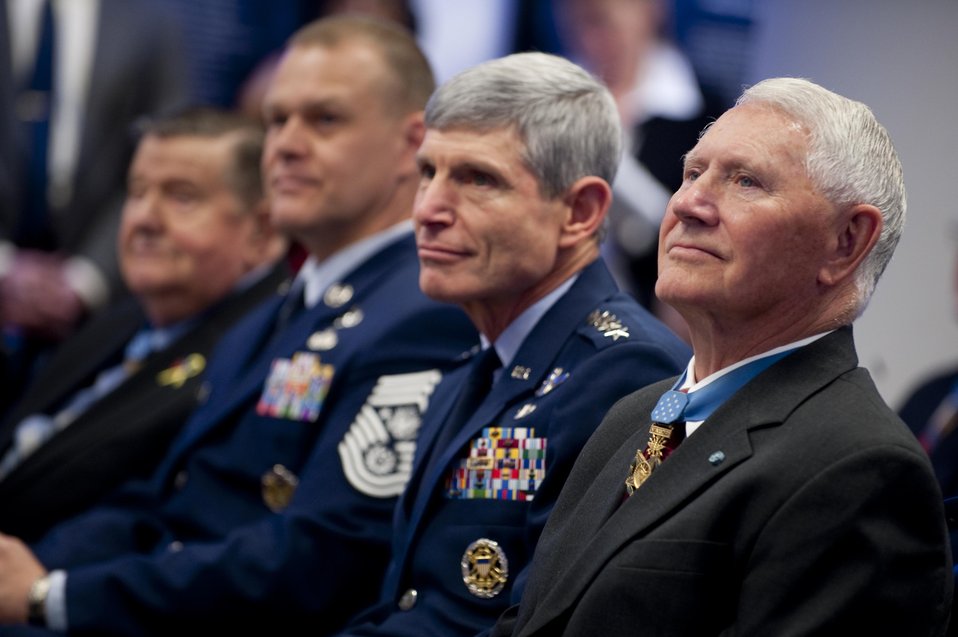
150th anniversary of the Medal of Honor

Retired Col. Leo K. Thorsness, president of the Congressional Medal of Honor Society; Air Force Chief of Staff Gen. Norton Schwartz; and Chief Master Sgt. of the Air Force James A. Roy listen to a speaker March 25, 2011, during a ceremony honoring the 150th anniversary of the Medal of Honor in the Hall of Heroes at the Pentagon in Washington, D.C.